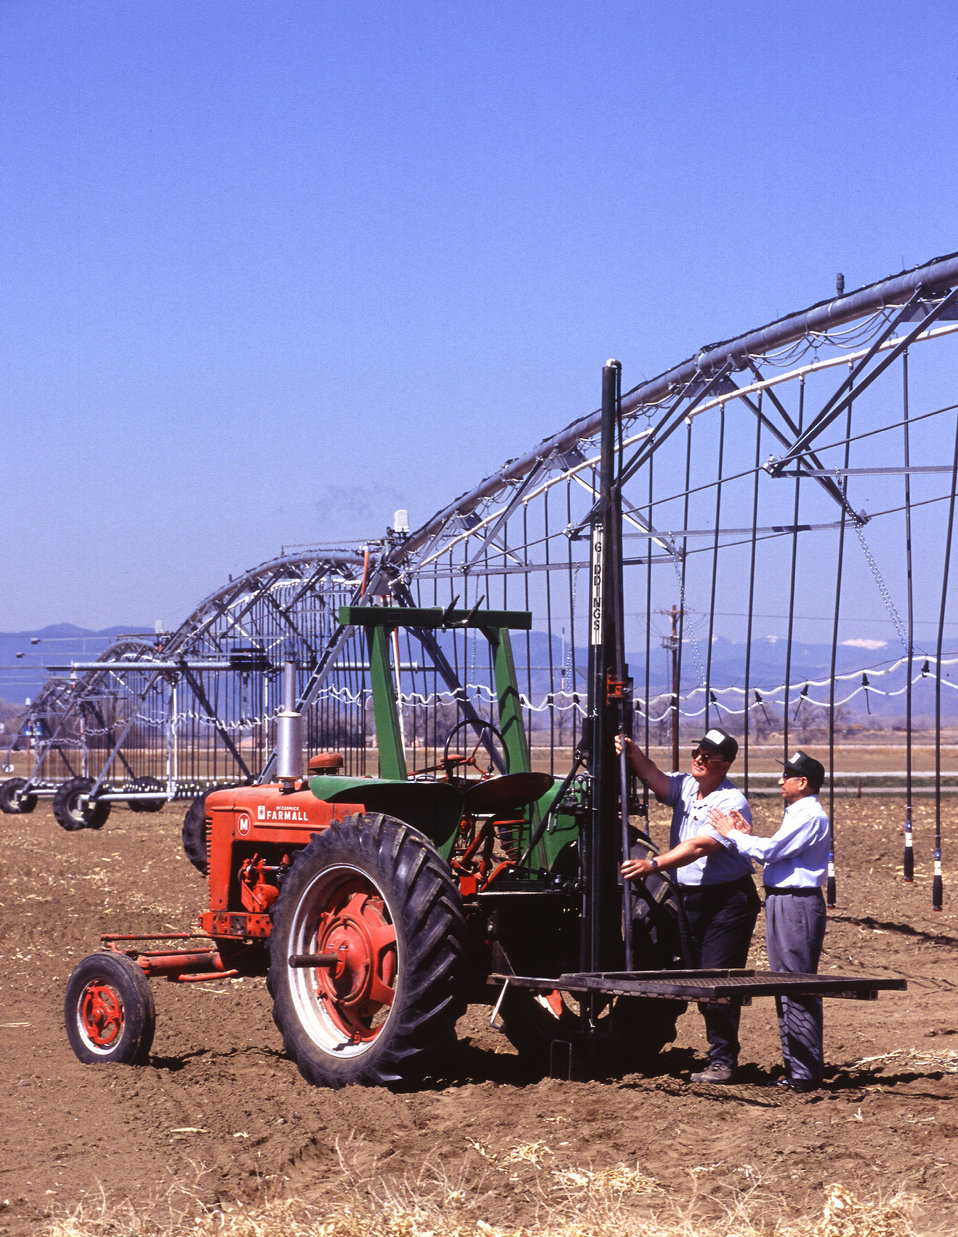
U.S. Department of Agriculture (USDA) Agricultural Research Service (ARS) technician Mike Murphy and USDA ARS soil scientist Laj Ahuja collect soil core samples from a field near Fort Collins, CO. These samples will yield information on soil horizons and their physical and chemical properties for the Root Zone Water Quality Model.